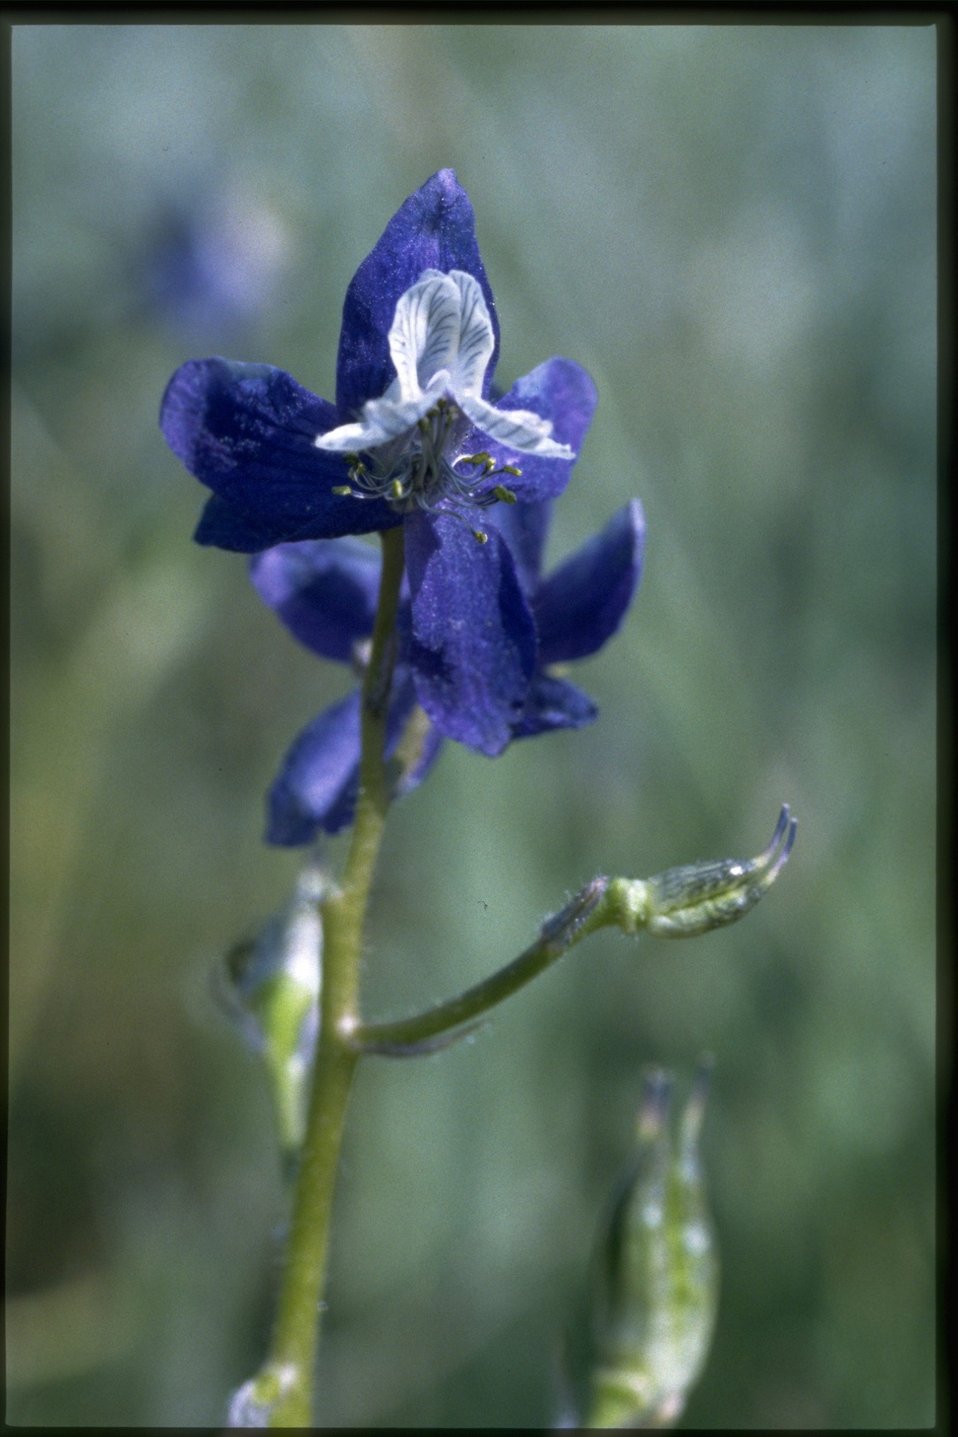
Closeup shot of Larkspur wildflowers (Delphinium Sp.).